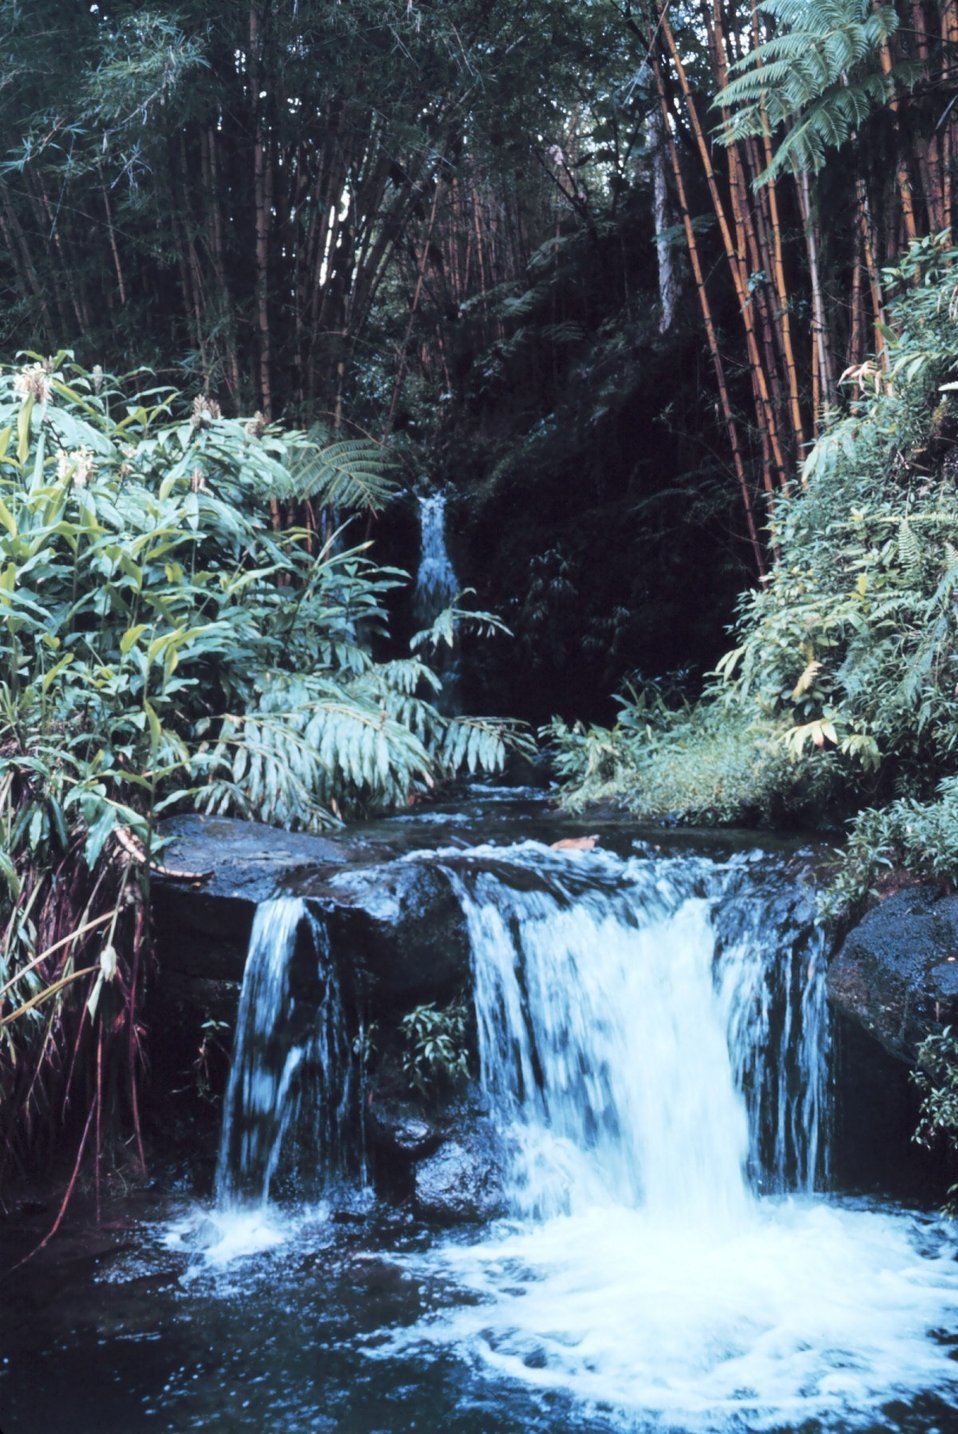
Waterfall surrounded by giant bamboo at Hawaii Tropical Botanical Gardens